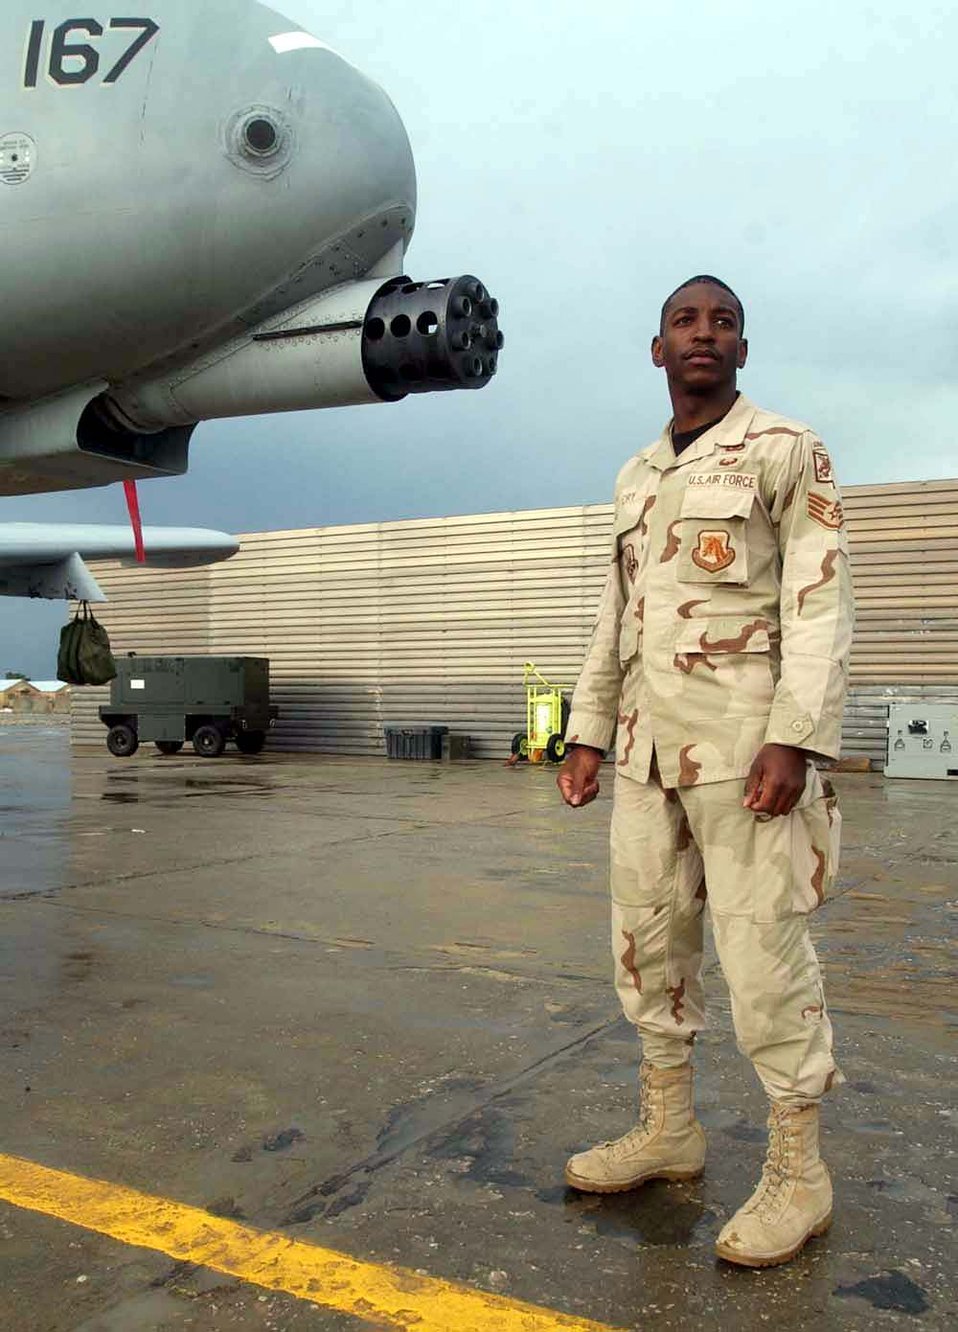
Getting in the fight

BAGRAM AIR BASE, Afghanistan -- Staff Sgt. Jason Cry has his eyes set on returning home to Shaw Air Force Base, S.C. He is a joint tactical air controller with the 682nd Air Support Operations Squadron. He provides ground-based air support for Operation Enduring Freedom.